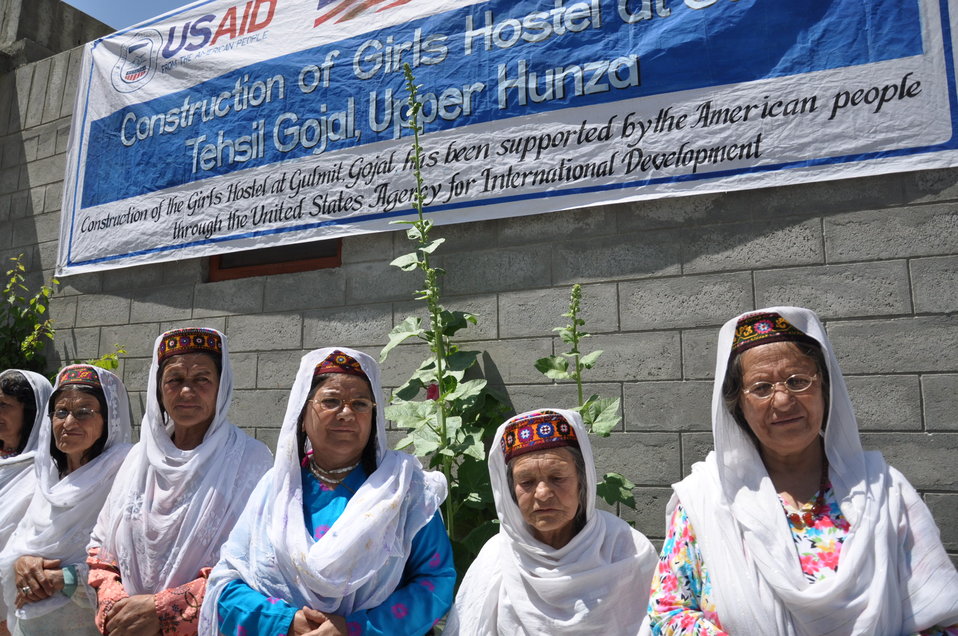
Village elders at Girls Hostel construction, Gulmit to welcome Deputy Director Karen Freeman (USAID)

In Gulmit, Deputy Mission Director Karen Freeman visited with students, parents, and teachers who are benefitting from the construction of a hostel for female students in a disaster-hit area of Hunza. At least 40 female students will stay in the hostel every year. Freeman toured the school and met with students, where she emphasized that the United States government is committed to not only helping communities rebuild after disasters like the 2010 floods, but also to improving access to quality education and teachers.